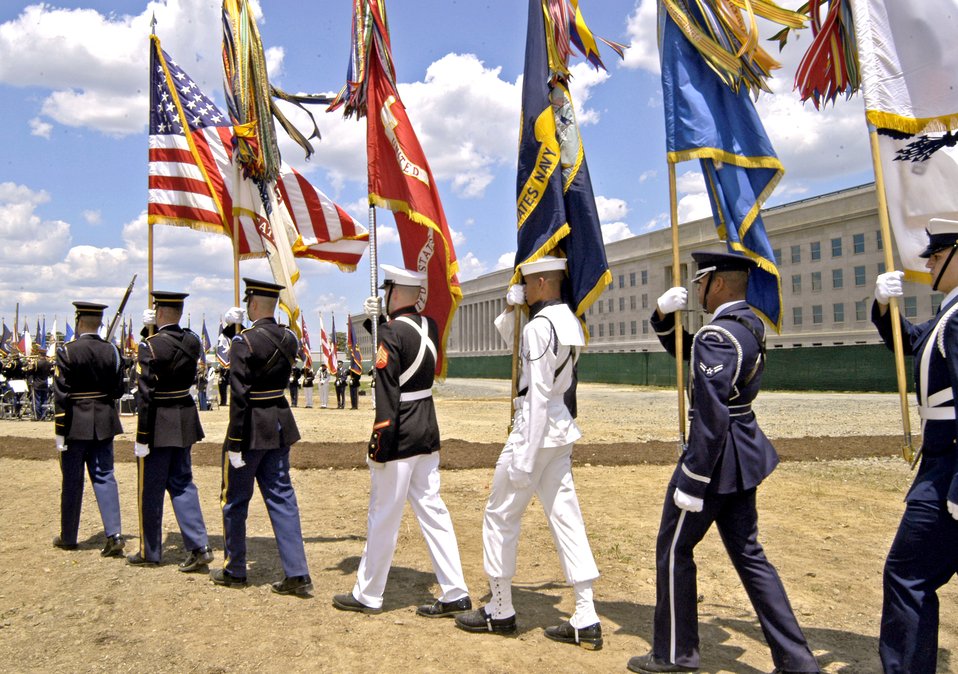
Site dedicated to Pentagon's Sept. 11 victims

A joint-service honor guard presents the colors at the dedication ceremony marking the start of construction on the Pentagon Memorial on Thursday, June 15. The memorial, tentatively scheduled for completion in September 2008, is dedicated in memory of the 184 lives lost when American Airlines Flight 77 crashed into the Pentagon on Sept. 11, 2001.